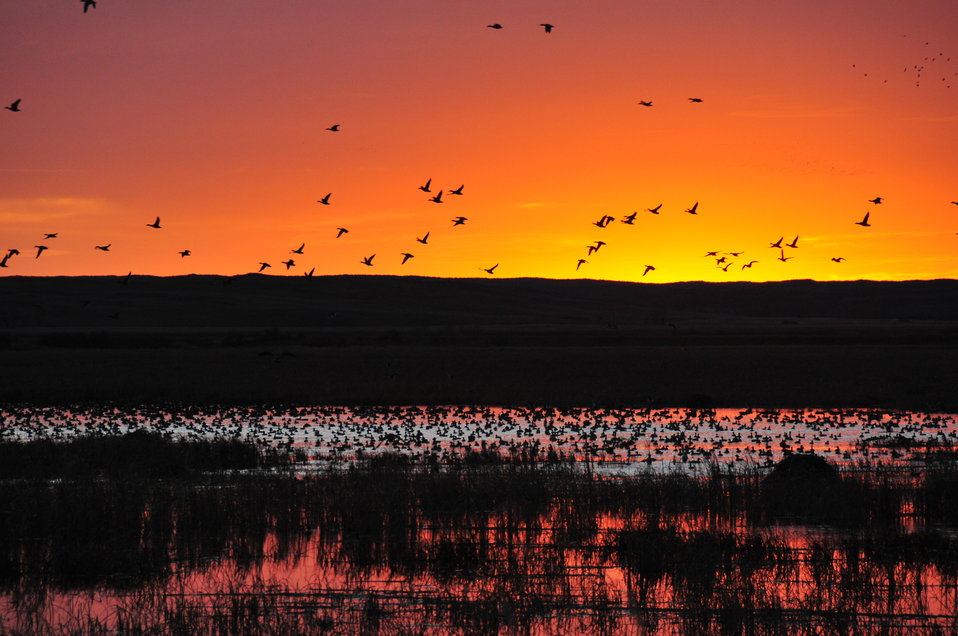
Mallards pile into Lacreek NWR at Sunset 1

The warm glow of sunset highlights mallards roosting on Lacreek National Wildlife Refuge.